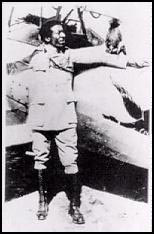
Cpl. Eugene J. Bullard

Eugene Jacques Bullard, the world's first African-American combat pilot, was one of 200 Americans who flew for France in World War I.